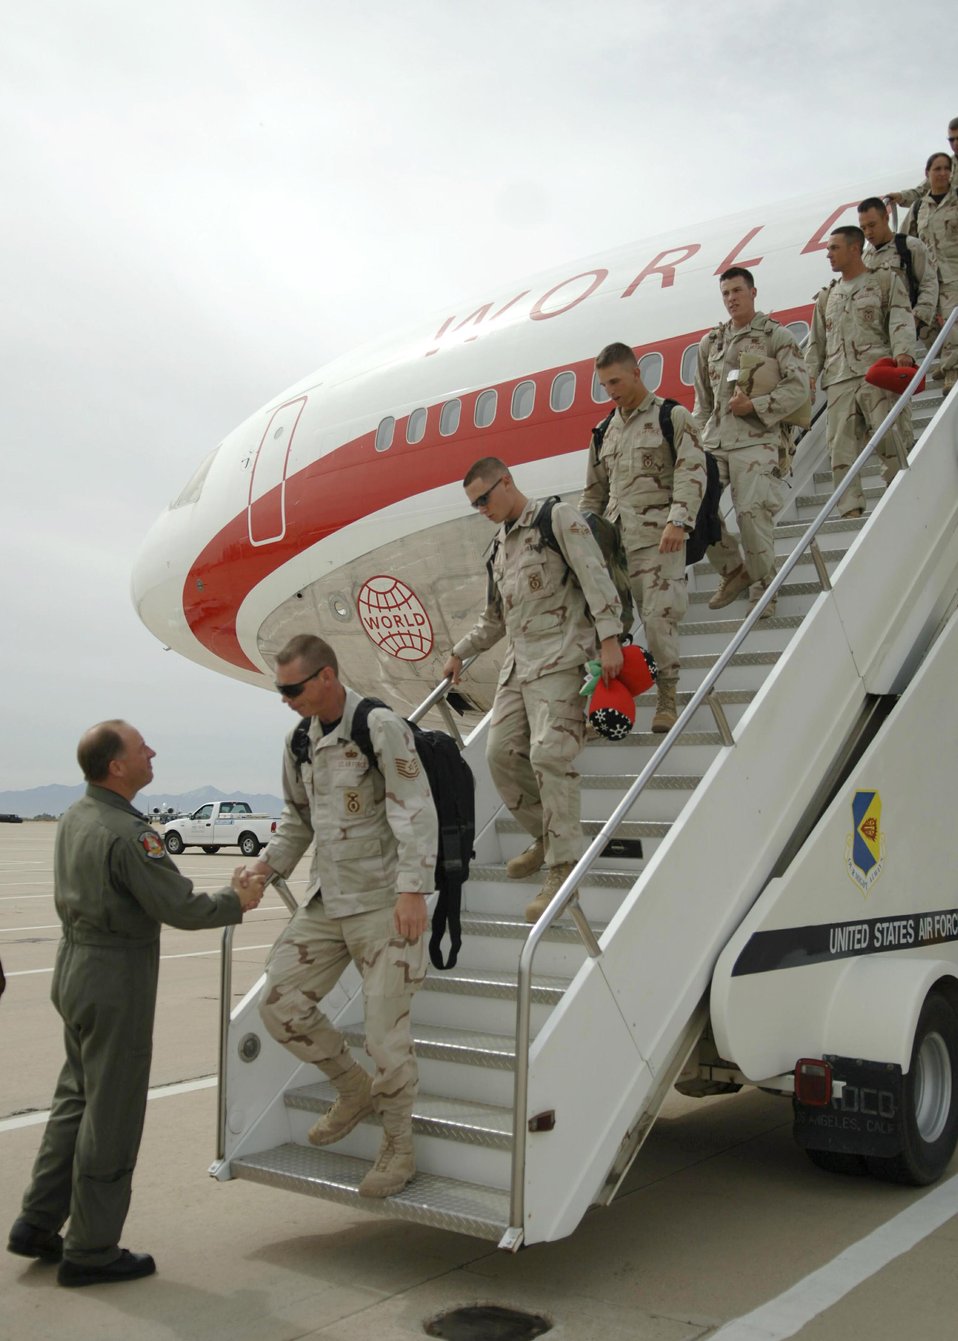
Welcome back to Arizona

Airmen from the 355th Security Forces Squadron are welcomed by Col. Michael Spencer as they return from deployment to Davis-Monthan Air Force Base, Ariz., Friday, March 17, 2006. The squadron was deployed to Camp Bucca, Iraq, for nine months in Support of Operation Iraqi Freedom. Colonel Spencer is the 355th Wing Commander.